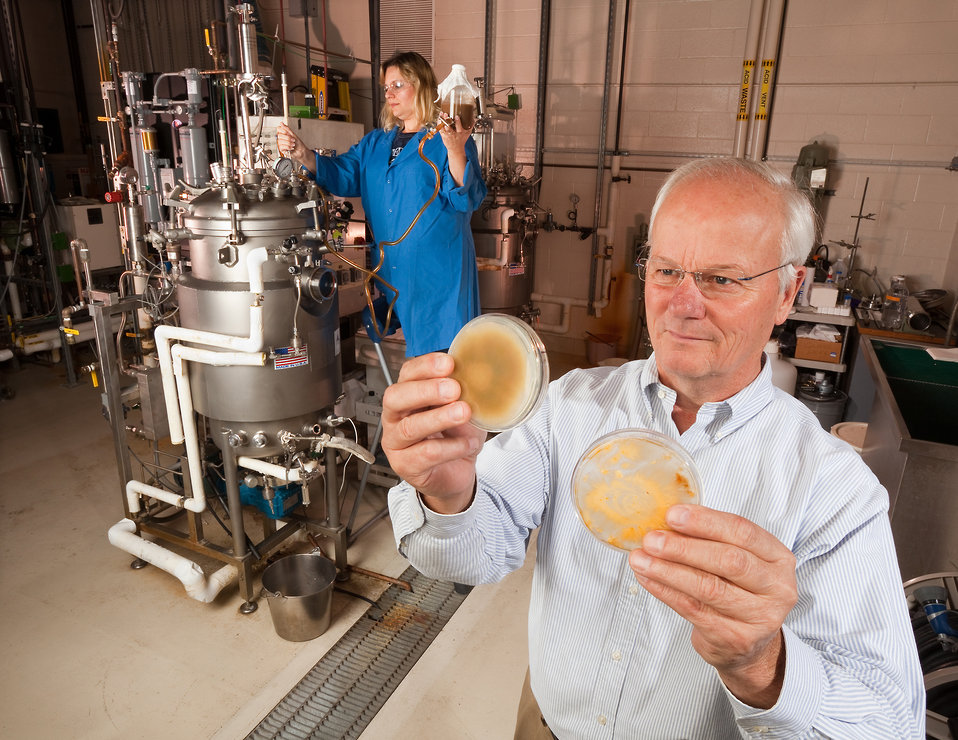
U.S. Department of Agriculture (USDA) Agriculture Research Service (ARS) microbiologist Mark Jackson (foreground) inspects pure cultures of an insect-killing fungus growing in petri dishes as lab technician Angela Payne inoculates a 100-liter fermenter with a liquid culture of the fungus in Beltsville, MD on Sept. 17, 2012.